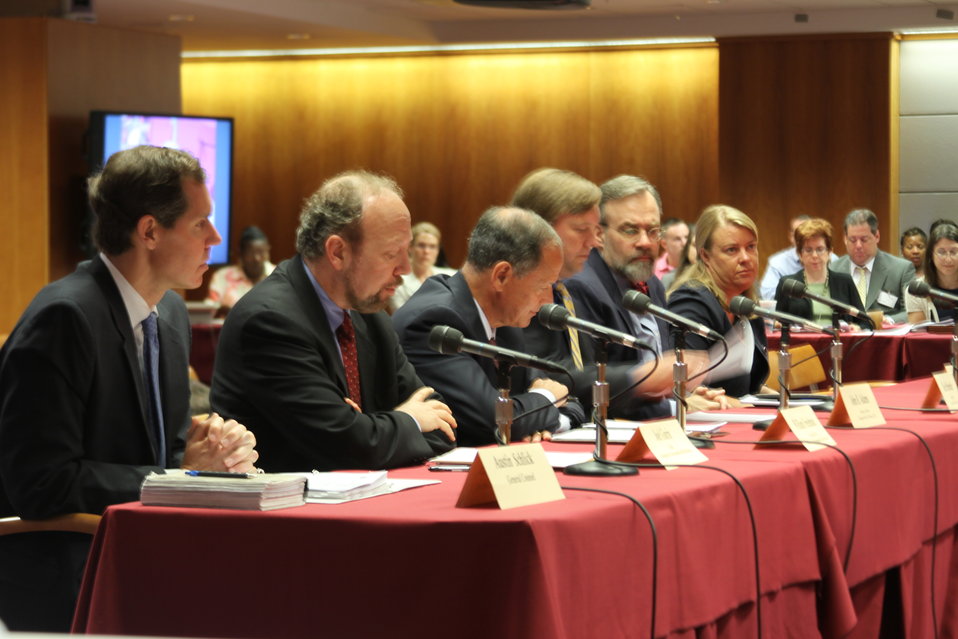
7/12/2011 Open Commission Meeting

The Consumer and Governmental Affairs Bureau's remarks regarding Billing for Unauthorized Charges ('Cramming') at the July 2011 Open Commission Meeting